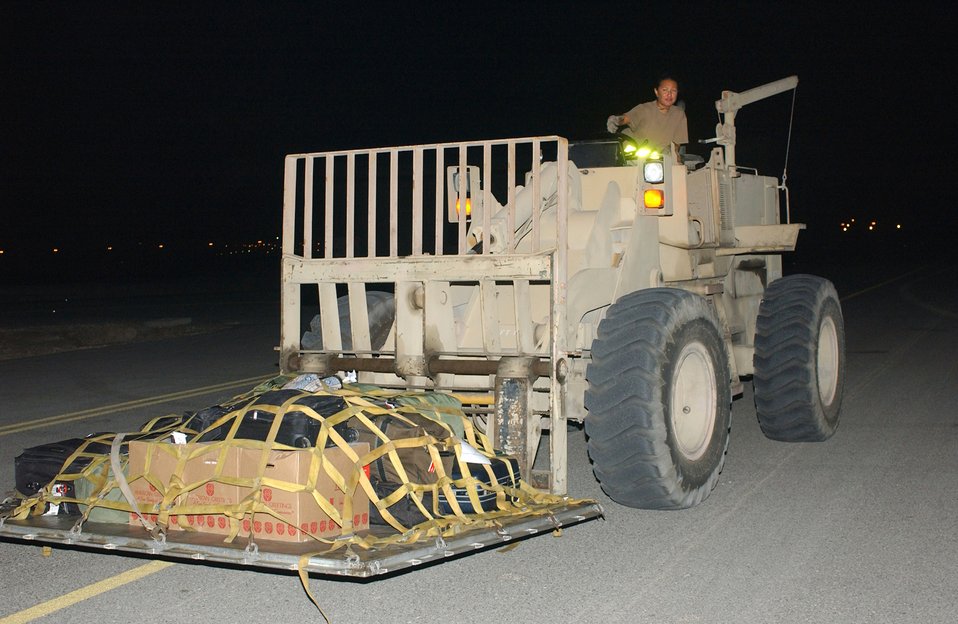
Air terminal operations center keeps wing rotating

SOUTHWEST ASIA -- Senior Airman Laura Caballero uses a forklift to load a pallet on an aircraft. She is an air transportation specialist with the 380th Expeditionary Logistics Readiness Squadron.